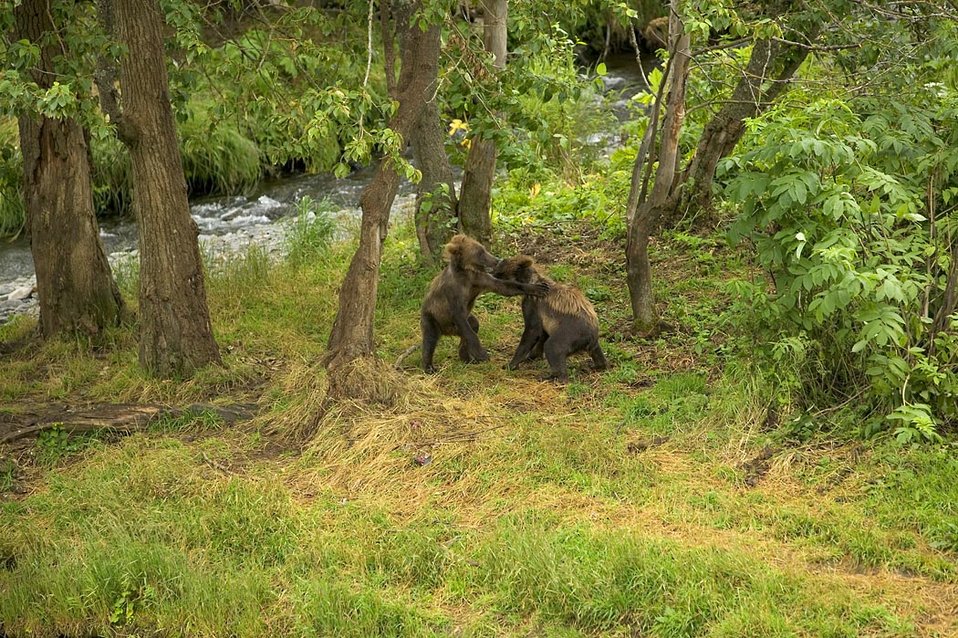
Brown bear cubs playing by river

Two grizzly bear cubs playing on their hind legs in shrub area.